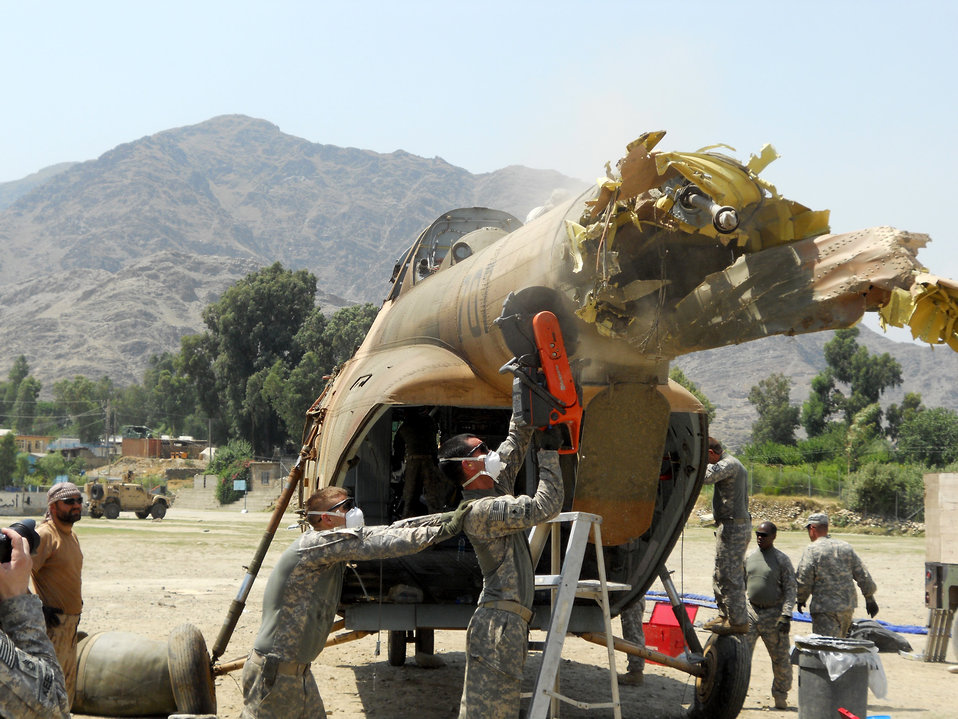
AAF Mi 17 crash

With support from Task Force Bronco 4, teams removed portions of a Mi-17 helicopter after a crash in Kunar province. Thirteen members of the 438th Air Expeditionary Wing responded to the incident scene. There were six people on board the aircraft when it crashed and officials indicate there were no life-threatening injuries. Airmen were on scene of the crash for more than a week.